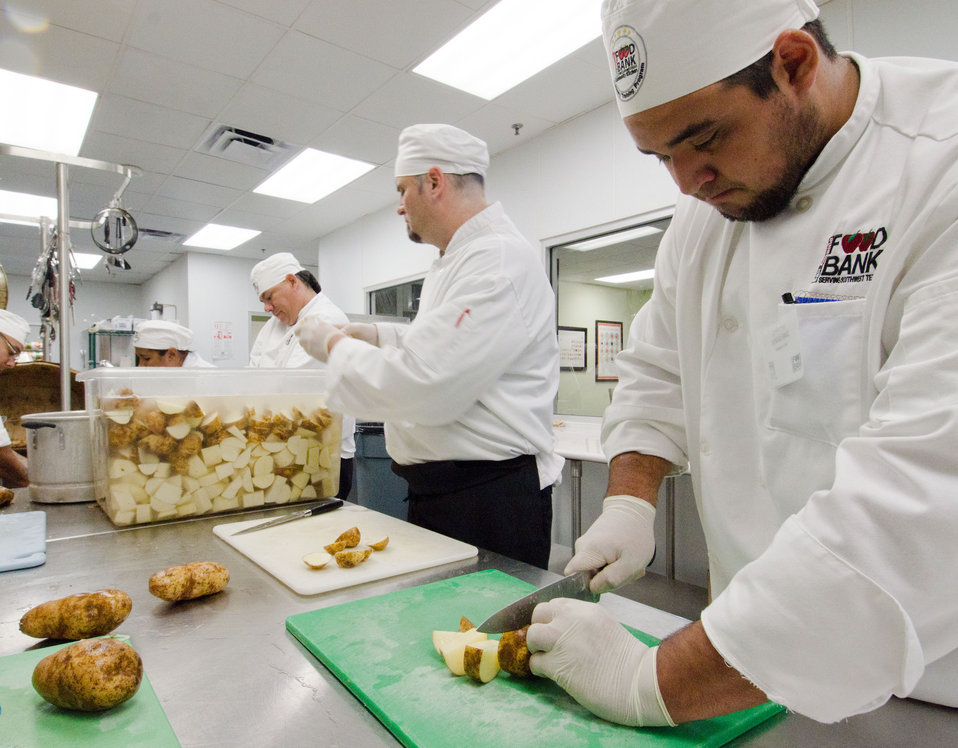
The San Antonio Food Bank (SAFB) Community Kitchen student Sergio Baiz (right) is part of Class 35, who are cutting potatoes that will be cooked and mashed for Kids Cafe meals being prepared by Community Kitchen Class 35, in San Antonio, TX, on Monday, October 31, 2011. Other meals prepared by the Community Kitchen include the U.S. Department of Agriculture (USDA) Summer Food Service Program for children during summer months, and the year-round Child and Adult Care Feeding Program (CACFP). The Community Kitchen trains the unemployed, feeds the hungry, and generates public support and revenue through social enterprise. They began creating meals in 2003, with volunteers and the Community Kitchen students looking to further themselves in a promising culinary career. Over 16-week course individuals receive basic culinary training, similar to portions of an accredited culinary institution, to develop their culinary job skills. The program is lead by Chef Rudy Garza and his team of instructor chefs, present training and work demands that build useful job skills. The students focus their new talents on the preparation of meals for area shelters, kids cafes, summer feeding sites (www.summerfood.usda.gov/), and catering services. San Antonio Food Bank is a non-profit organization that serves as a clearinghouse by receiving and storing truckloads of donated food, produce, and other grocery. SAFB distribute these items to over 500 service agencies that help people in need.
“We couldn’t do what we do without our partnership with USDA’” said President and CEO Eric Cooper. He continues, “We are privileged in partnering (with the USDA) to feeding kids, through the summer, with the Summer Food Service Program, and throughout the year, with the Child and Adult Care Feeding Program (CACFP). Then in our approach to feeding seniors, we partner with USDA in the Commodities Supplemental Food Program (CSFP), and the Senior Farmer’s Market (Nutrition) Program. And then work to bring all our (needy) parties together with our Supplemental Nutrition Assistance Program (SNAP) Outreach. You know, once families have access to food we believe it is important to educate them. Through the support of the SNAP-Education Program we are able to educate them during their time of need. With this comprehensive approach we are really able to get the right food, at the right amount, at the right time, to needy families throughout our community – which allows us to feed the fifty-eight thousand we do, each week.”
SAFB serves 16 counties in Southwest Texas and states, “Nearly one out of every four children and one out of every five adults in Southwest Texas lives in poverty and has difficulty meeting basic nutritional needs.” According to SAFB, sixty-five percent of the people requesting emergency food have children. “Additionally, the senior citizens and those living on a fixed income generally have limited funds for a consistent grocery budget.”
San Antonio is the seventh largest city in the nation with surrounding farms and ranches near its rivers and water supplies. When available they provide fresh surplus produce. Other commodities come from the food industry and manufacturers. The major food brand companies that for various reasons have surplus commodities donate it to SAFB.
The United States Department of Agriculture donates commodities through programs such as The Emergency Food Assistance Program (TEFAP), while Texas farmers supply fresh produce to their Fresh Produce Program.
Public donations come in the form of money, food, volunteer time, and advocacy. Their fleet of trucks to pickup and deliver food as needed. USDA photo by Lance Cheung
www.fns.usda.gov/fns/
www.fns.usda.gov/snap/
www.fns.usda.gov/fdd/programs/tefap/
www.summerfood.usda.gov/
The San Antonio Food Bank (SAFB) Community Kitchen students Sergio Baiz is part of a team of students cutting potatoes that will be cooked and mashed for Kids Cafe meals being prepared by Community Kitchen Class 35, in San Antonio, TX, on Monday, October 31, 2011. The Community Kitchen trains the unemployed, feeds the hungry, and generates public support and revenue through social enterprise. They began creating meals in 2003, with volunteers and the Community Kitchen students looking to further themselves in a promising culinary career. Over 16-week course individuals receive basic culinary training, similar to portions of an accredited culinary institution, to develop their culinary job skills. The program is lead by Chef Rudy Garza and his team of instructor chefs, present training and work demands that build useful job skills. The students focus their new talents on the preparation of meals for area shelters, kids cafes, summer feeding sites (www.summerfood.usda.gov/), and catering services. The San Antonio Food Bank is a non-profit organization that serves as a clearinghouse by receiving and storing truckloads of donated food, produce, and other grocery. SAFB distribute these items to over 500 service agencies that help people in need.
“We couldn’t do what we do without our partnership with USDA’” said President and CEO Eric Cooper. He continues, “We are privileged in partnering (with the USDA) to feeding kids, through the summer, with the Summer Food Service Program, and throughout the year, with the Child and Adult Care Feeding Program (CACFP). Then in our approach to feeding seniors, we partner with USDA in the Commodities Supplemental Food Program (CSFP), and the Senior Farmer’s Market (Nutrition) Program. And then work to bring all our (needy) parties together with our Supplemental Nutrition Assistance Program (SNAP) Outreach. You know, once families have access to food we believe it is important to educate them. Through the support of the SNAP-Education Program we are able to educate them during their time of need. With this comprehensive approach we are really able to get the right food, at the right amount, at the right time, to needy families throughout our community – which allows us to feed the fifty-eight thousand we do, each week.”
SAFB serves 16 counties in Southwest Texas and states, “Nearly one out of every four children and one out of every five adults in Southwest Texas lives in poverty and has difficulty meeting basic nutritional needs.” According to SAFB, sixty-five percent of the people requesting emergency food have children. “Additionally, the senior citizens and those living on a fixed income generally have limited funds for a consistent grocery budget.”
San Antonio is the seventh largest city in the nation with surrounding farms and ranches near its rivers and water supplies. When available they provide fresh surplus produce. Other commodities come from the food industry and manufacturers. The major food brand companies that for various reasons have surplus commodities donate it to SAFB.
The United States Department of Agriculture donates commodities through programs such as The Emergency Food Assistance Program (TEFAP), while Texas farmers supply fresh produce to their Fresh Produce Program.
Public donations come in the form of money, food, volunteer time, and advocacy. Their fleet of trucks to pickup and deliver food as needed.